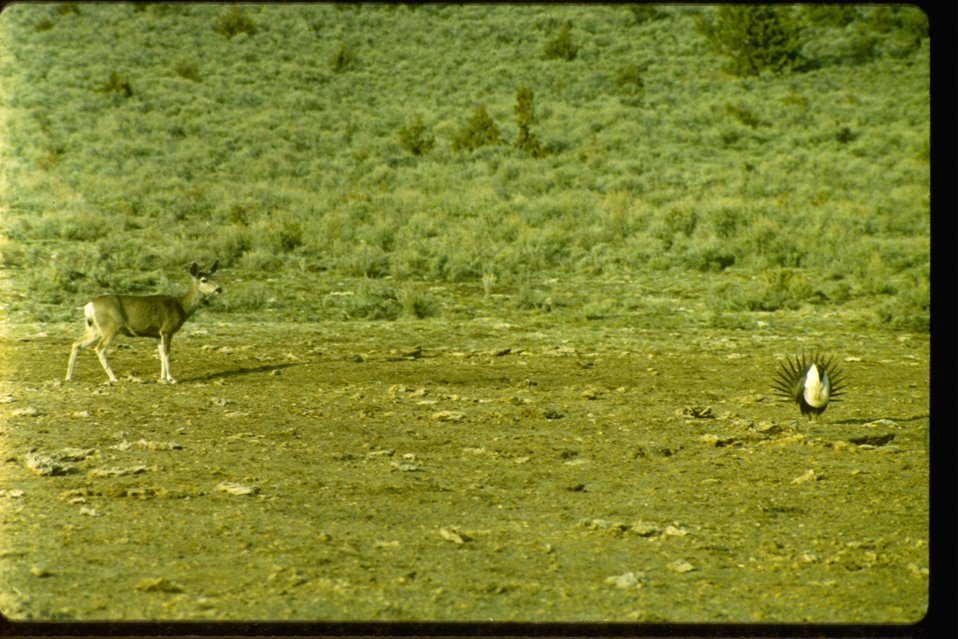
Deer and Sage Grouse standing in grassy area.